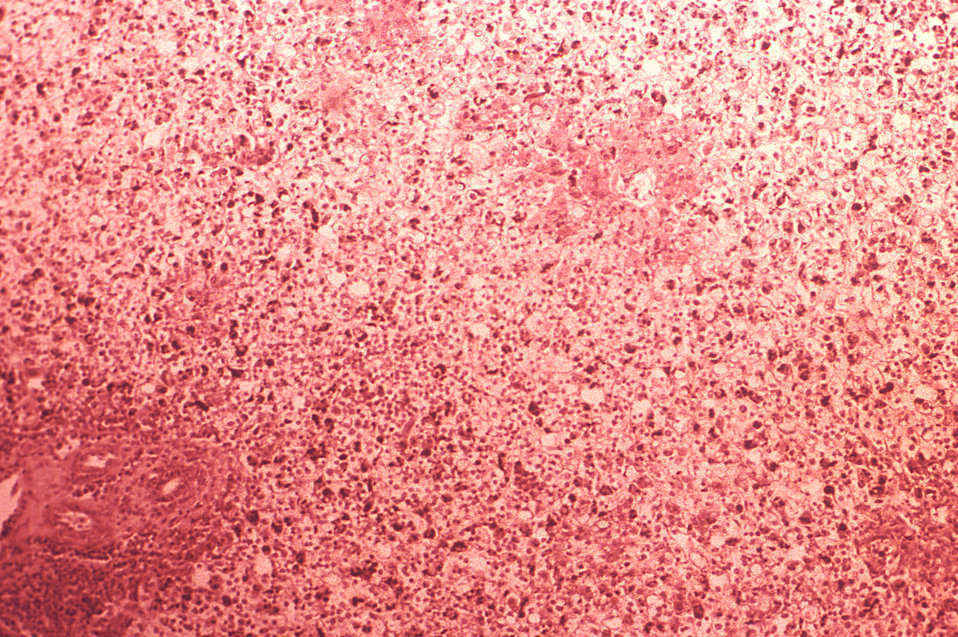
Under a low magnification of 100X, this hematoxylin-eosin-stained (H&E) photomicrograph depicts the cytoarchitectural changes found in a liver tissue specimen extracted from a deceased yellow fever patient. Note that 'only a collar of recognizable hepatocytes remains around the central vein. The remainder of the lobule is occupied by necrotic debris.' Also present is fatty degenerative changes, which in this case, was associated with a state of malnutrition, and an accompanying malarial infection. See PHIL 2176, and 8239, depicting TEMs of the yellow fever virus.